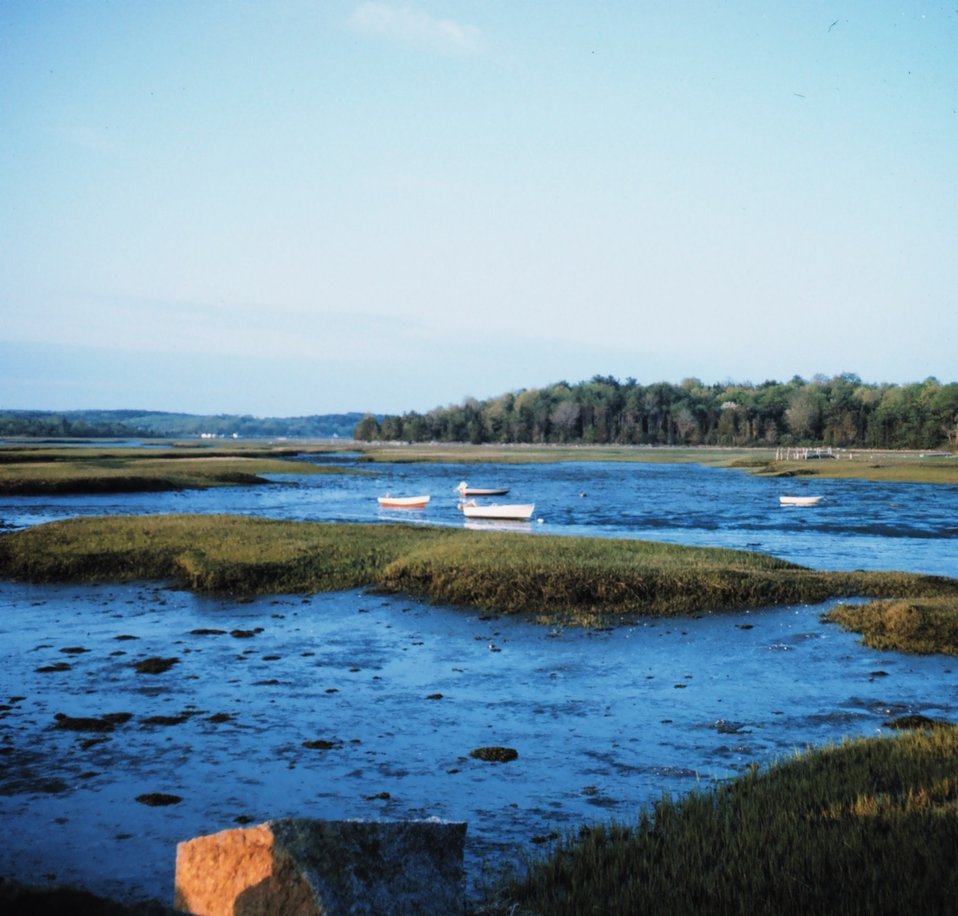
Low tide near Gloucester.